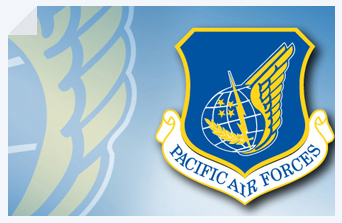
Pacific Air Forces shield; fact sheet graphic.